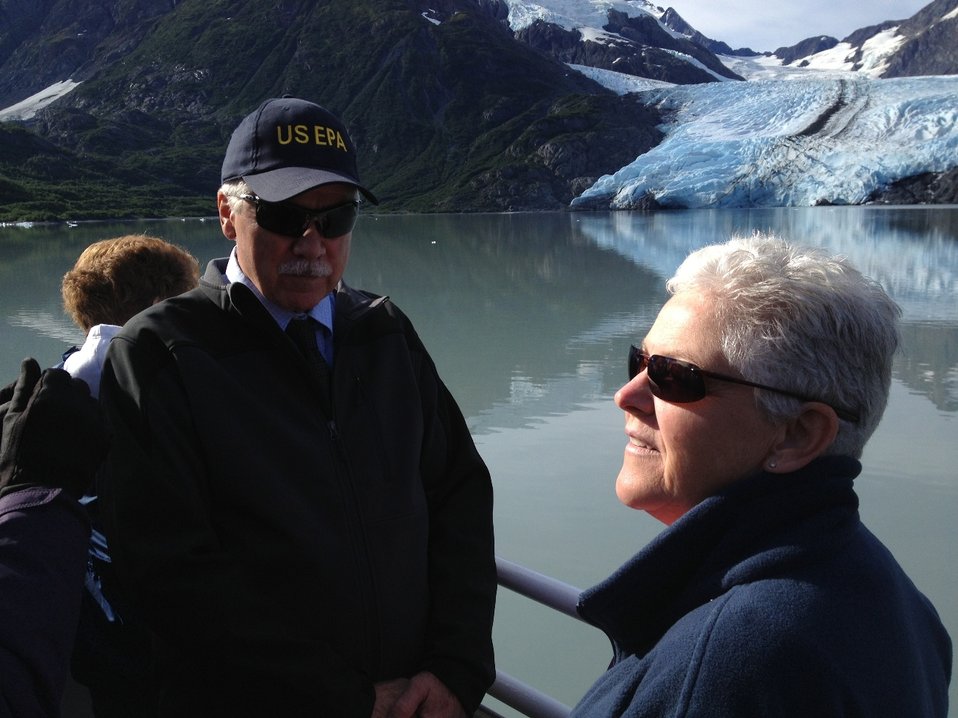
Administrator Gina McCarthy at Portage Lake Glacier, Alaska

On Monday, August 26 Administrator McCarthy visited the Portage glacier near Anchorage, Alaska to see first-hand some of the impacts of climate change.